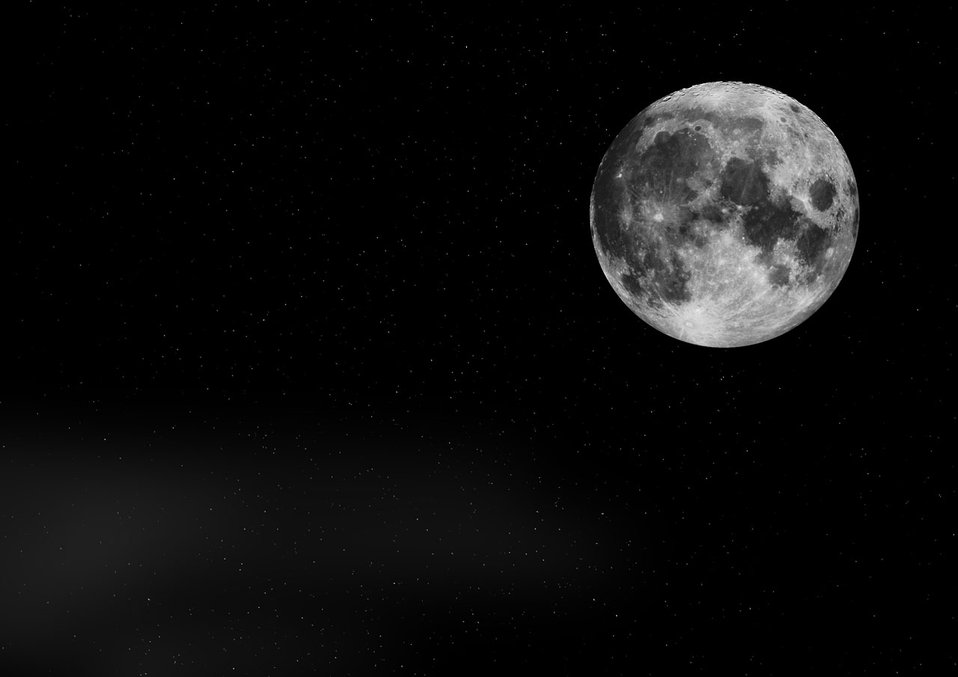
Moon in space.